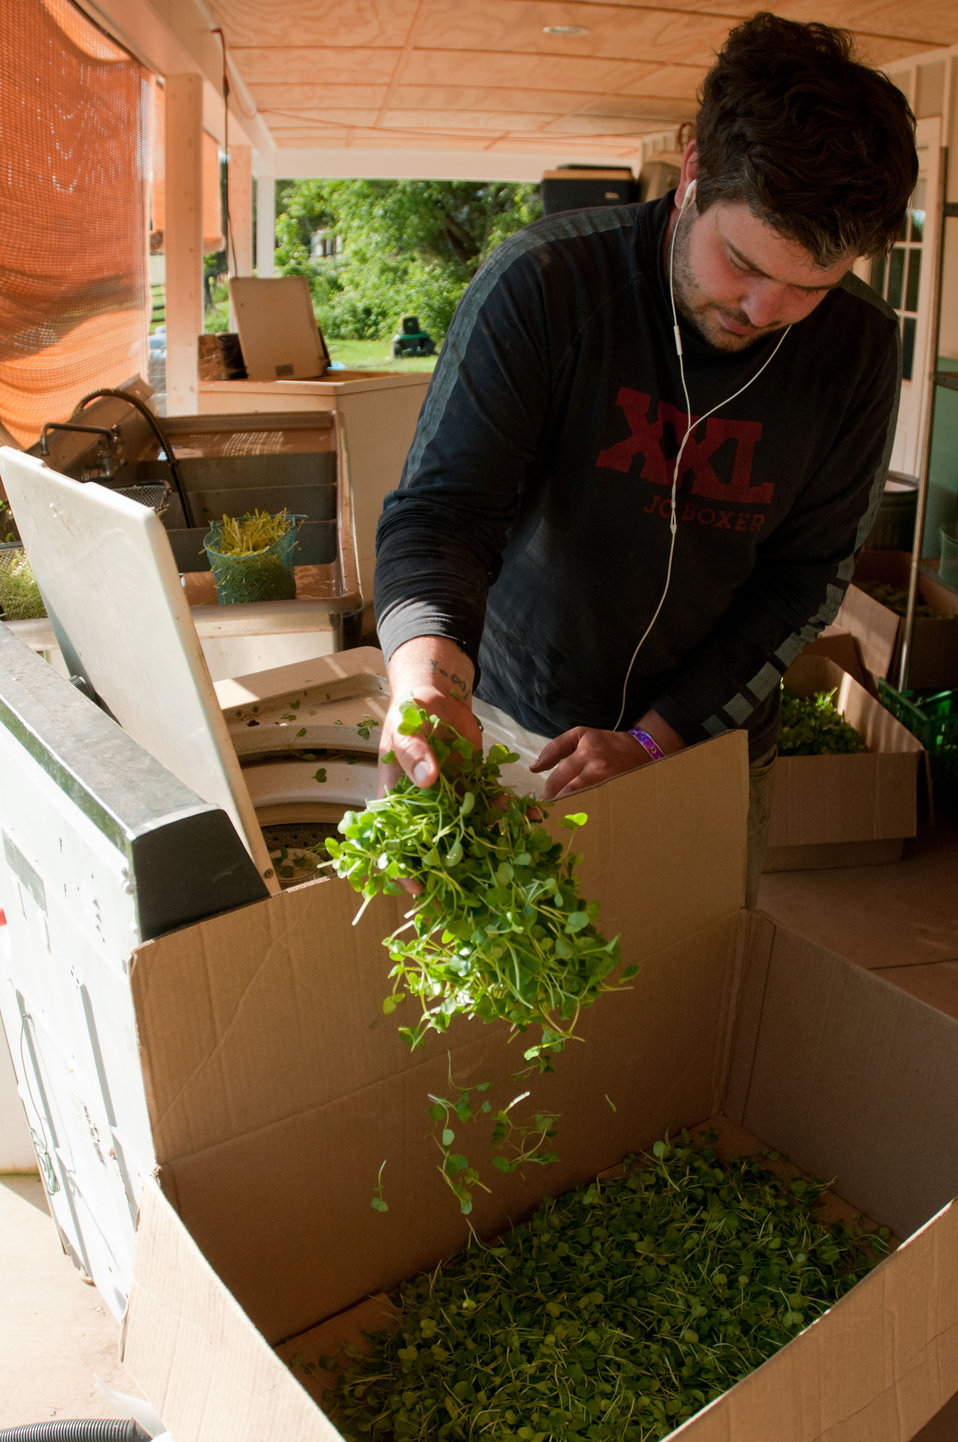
Christopher Douherty gently sprinkles sunflower sprouts into a holding box before they are weighed and bagged for Manakintowne Specialty Growers, a 21-acre farm in Powhatan County, Virginia, on Friday, May 6, 2011. The farm where Jo Pendergraph, her family and team raise specialty produce for chefs and markets of Richmond, Charlottesville and Williamsburg, VA area. This includes the online food hub of Lulus Local Food served by the Fall Line Farms cooperative. This is one of the farms that chefs get those seemingly unique greens such as French Sorrel, Pea Shoots, Frisee, Tat soi, Mizuna, Pink/green radish shoots, Sunflower shoots, Baby red mustard, Tuscan Kale, Beet greens. All harvested by hand and scissors. As well as micro greens such as Pak choi, Tat soi, Mizuna, Purple kohlrabi, Shungiku (edible chrysanthemum), Ruby chard, Purple/Daikon/Triton radish, Red amaranth and Bull's Blood Beet. Edible flowers such as African Blue Basil, Nasturtiums, Johnny Jump Ups, and Chive blossoms Dianthus (pinks) are grown here. The seasonal choices are listed by suppliers and ordered by members on Lulus Local Food website, the food is distributed to pick-up points in the Richmond, VA area. They also offer a wide variety of household food staples and specialty fruits, vegetables, meats, soaps, eggs, cheeses, flowers, honey, pastas, sauces, syrups, baked goods, mushrooms, flour and grains from and for the Richmond. VA area.